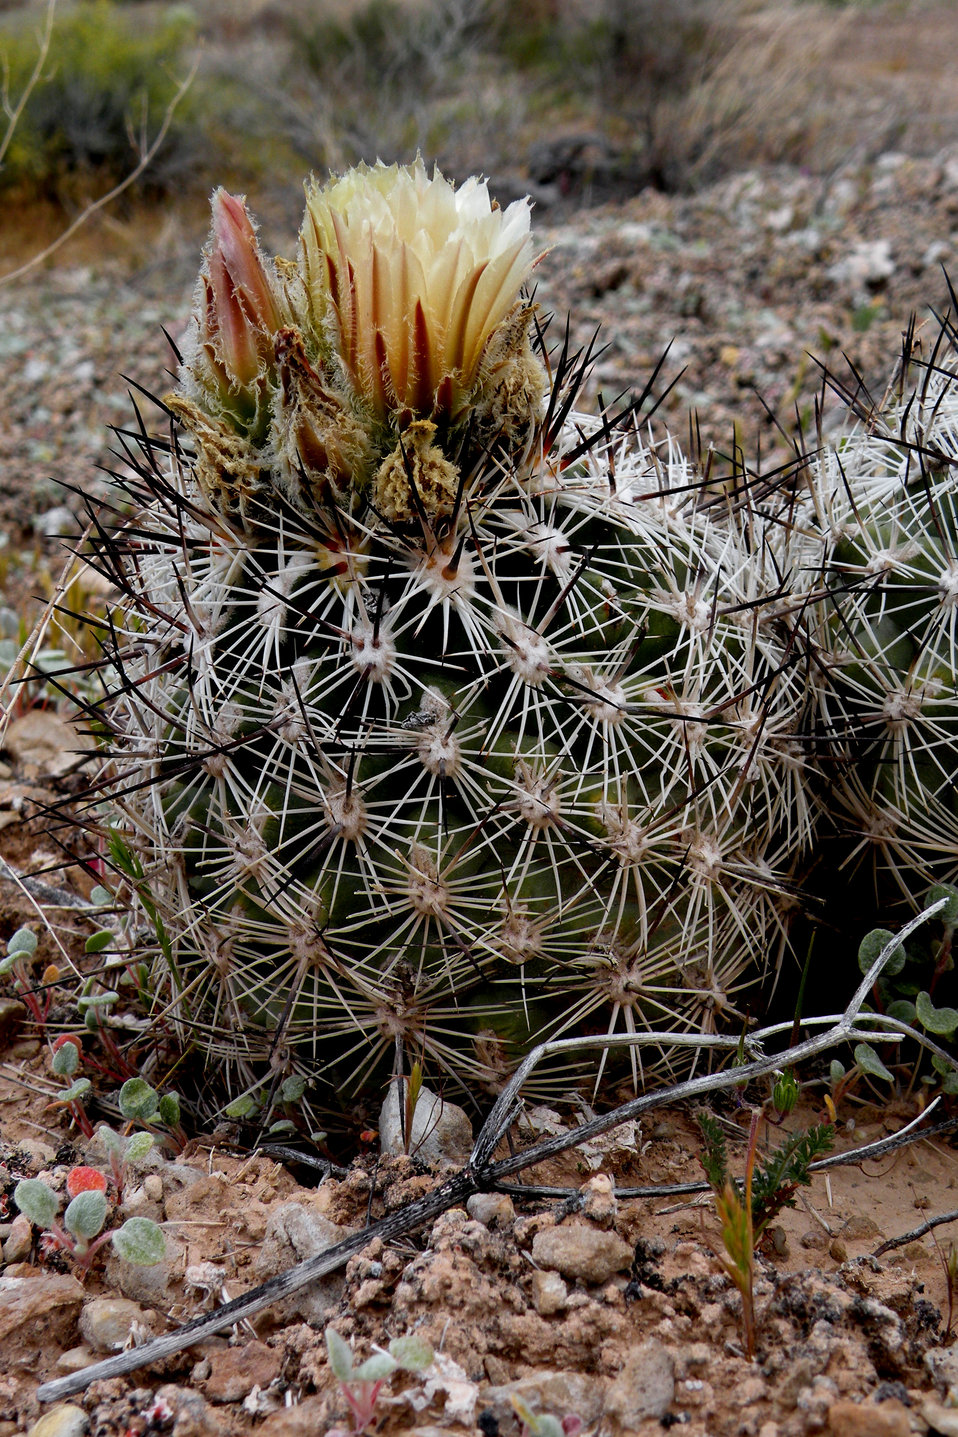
Siler pincushion cactus (Pediocactus sileri)

Siler pincushion cactus is restricted to clay soils of the Moenkopi Formation. It occurs on rolling hills and bluffs in sparsely vegetated desert shrub communities between 3,000 and 5,000 ft. in elevation. Siler Pincushion cactus is endemic to northern AZ and southwestern UT. It is listed threatened.